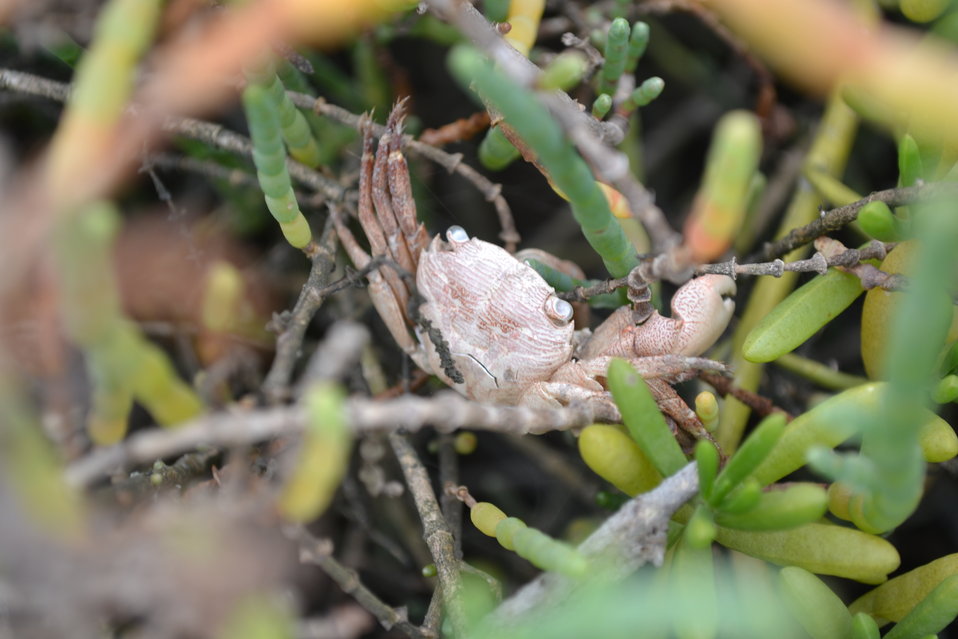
Fiddler crab exoskeleton shedding within the marsh

A bird might get a surprise if it tries to eat this empty crab shell!